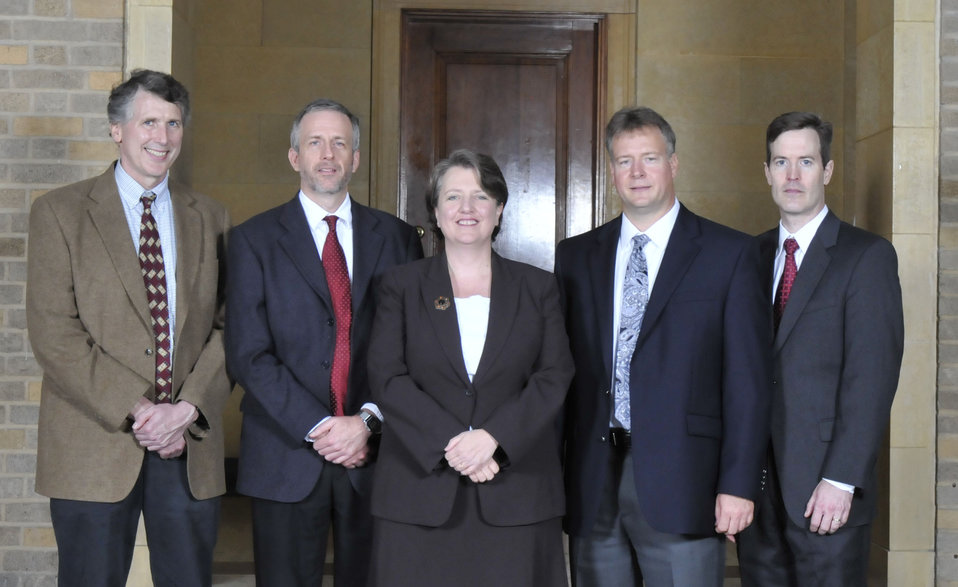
Rural Atlas Team
Economic Research Service, Washington, DC
Vincent E. Breneman and John B. Cromartie Group Leaders
For significant contributions to the production of the Atlas of Rural and Small Town America, which provides searchable and easily accessible data on migration trends, employment and demographics in rural America.
On September 14, 2011 in the patio of the Whitten Building Patio of the US Department of Agriculture in Washington, DC.